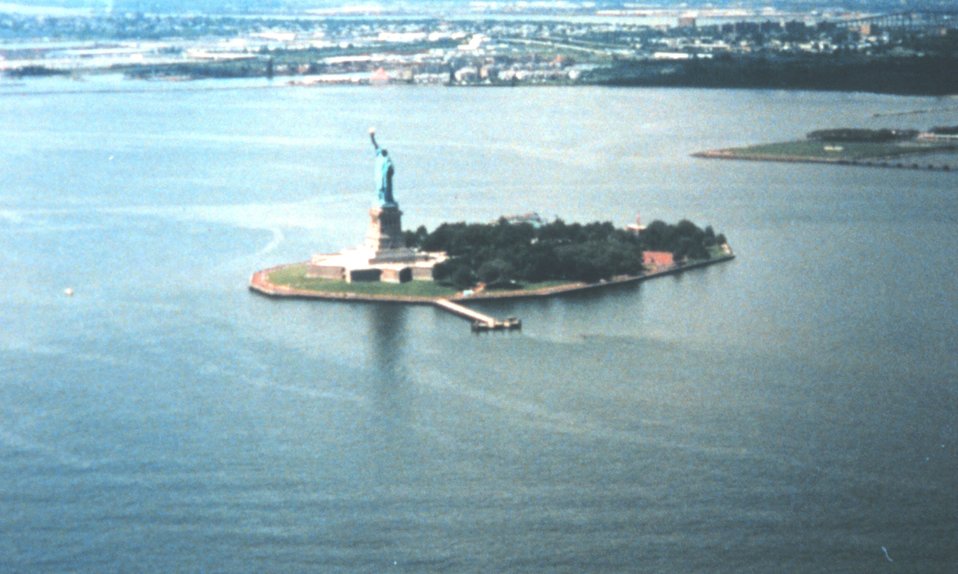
Statue of Liberty